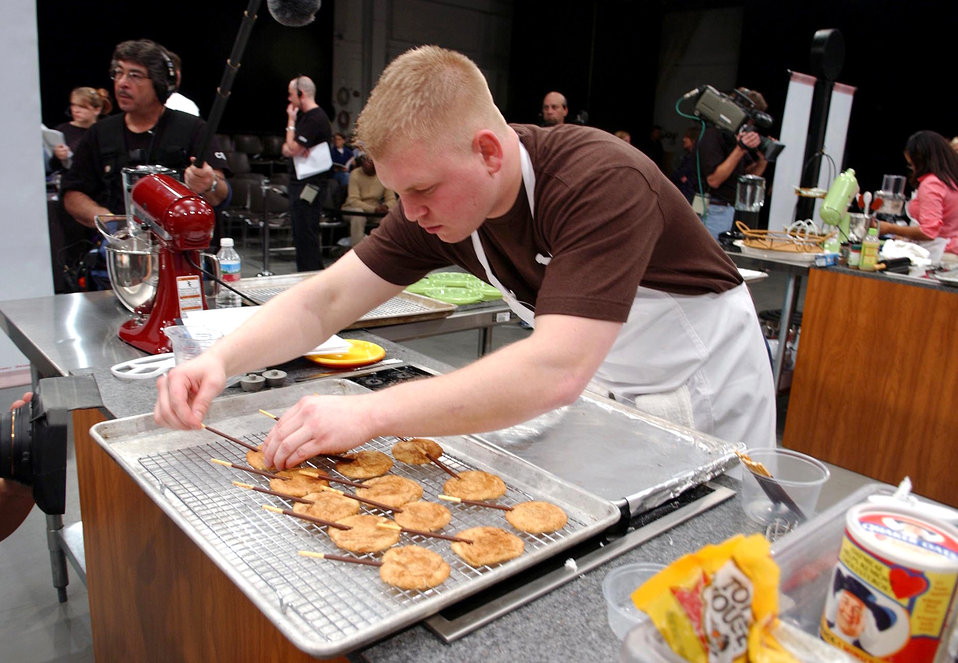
Missile Chef competes on TV

Senior Airman David Sutherland prepares his snickerdoodle pop cookies to compete against four others during the 2006 Food Network Cookie Challenge Monday, March 20 in Denver. Airman Sutherland is a missile chef with the 741st Missile Squadron, Minot Air Force Base, N.D.